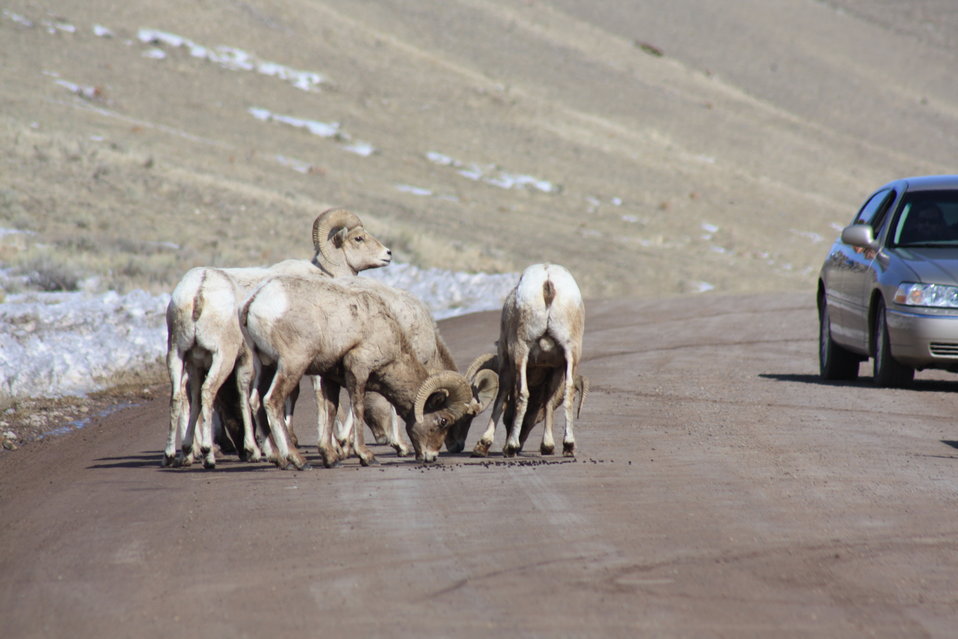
Bighorn Sheep Salt Lick

Magnesium chloride (salt)-treated water, used for dust abatement by Teton County, WY during the summer, remains on the road surface throughout the year and serves as an attractant that draws bighorn sheep to the road surface during the winter months. This gives the public a non-fee opportunity to closely view bighorn sheep but is a concern for refuge managers because of the potential for human/wildlife conflicts.

Credit: USFWS / Ann Hough, National Elk Refuge volunteer